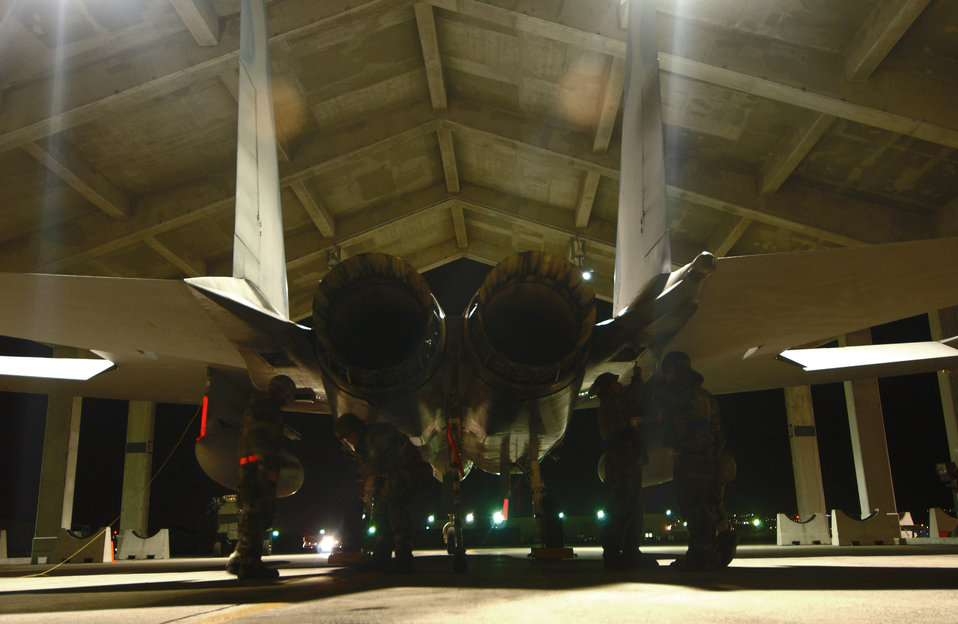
Airmen, Marines join forces during exercise at Kadena

Airmen from the 44th Aircraft Maintenance Unit drop panels from an F-15 Eagle to check the stag actuators for flight control problems during Exercise Beverly High 09-01 Dec. 4 at Kadena Air Base, Japan. The exercise, which was conducted jointly with Marines from Marine Corps Station Iawkuni, tested the ability of both services to execute their critical missions under simulated combat conditions.